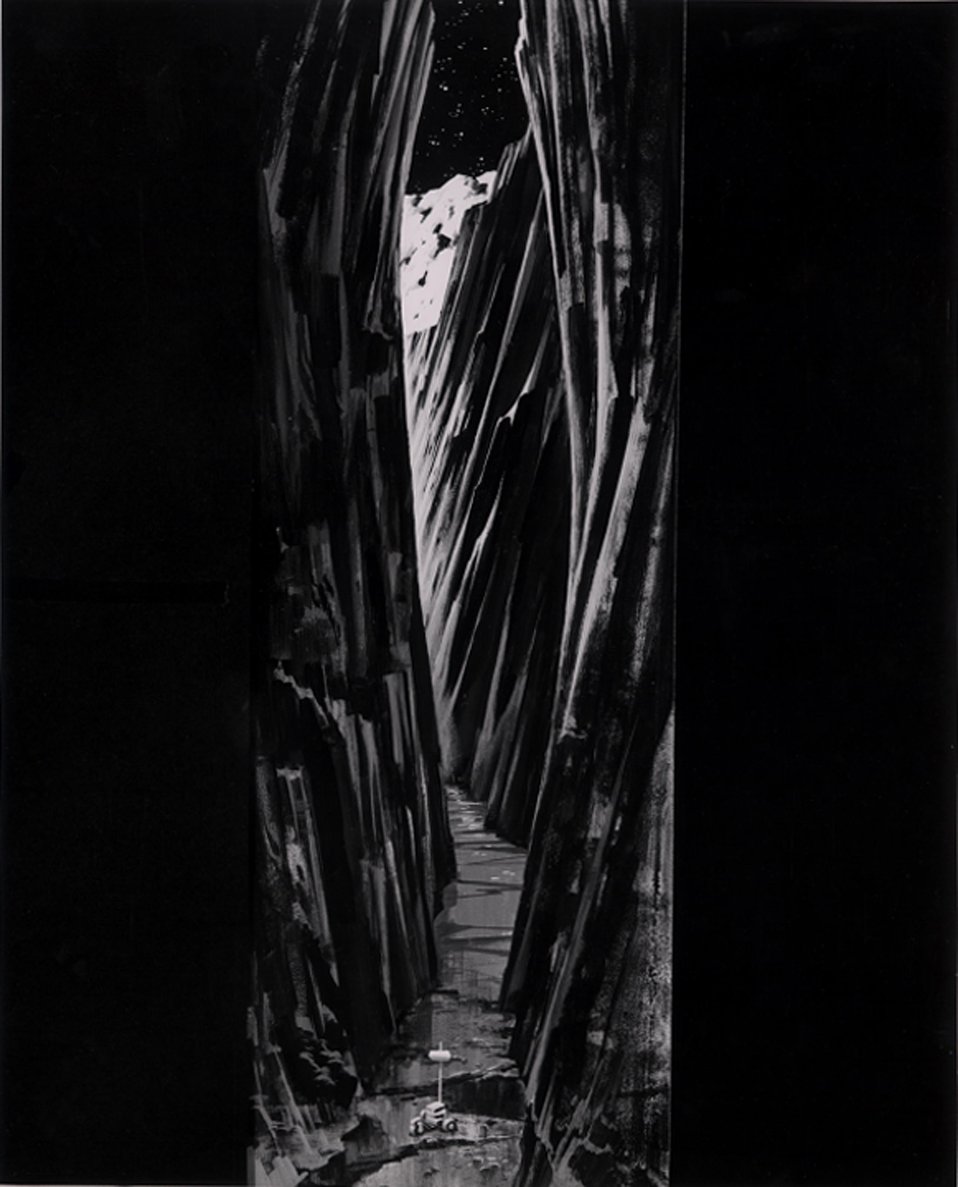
Artist's conception of space exploration, showing communications vehicle in a moon orator.